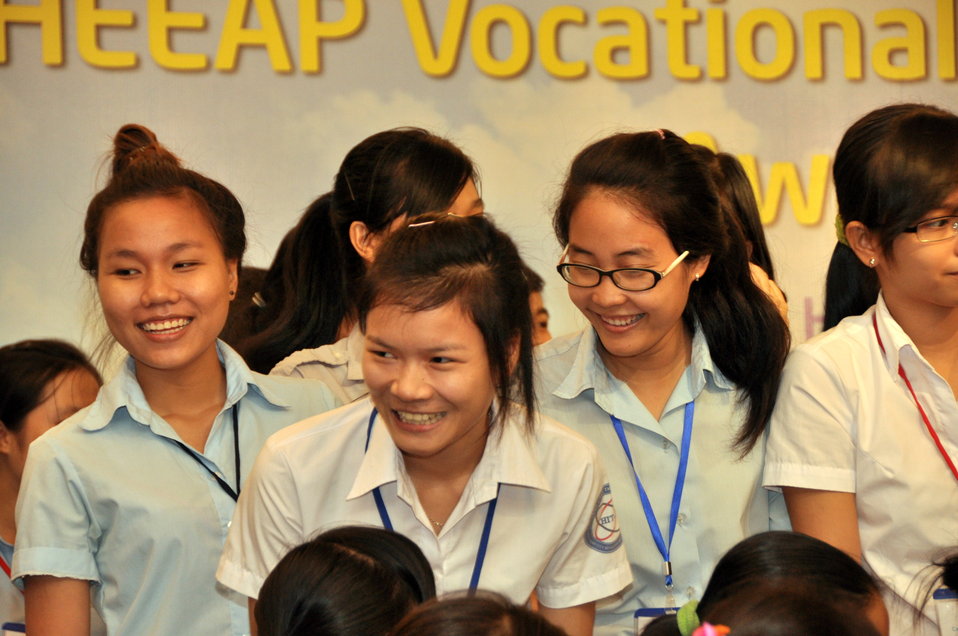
Female Vocational Student Scholarship Ceremony

Ho Chi Minh City, January 11, 2013